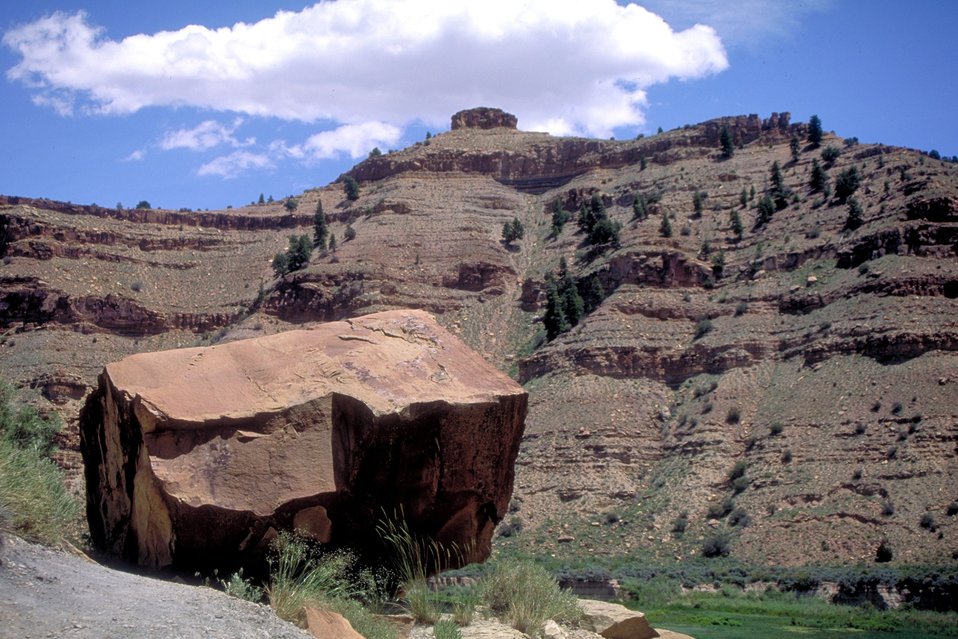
Nine-Mile Canyon near Price, Utah.